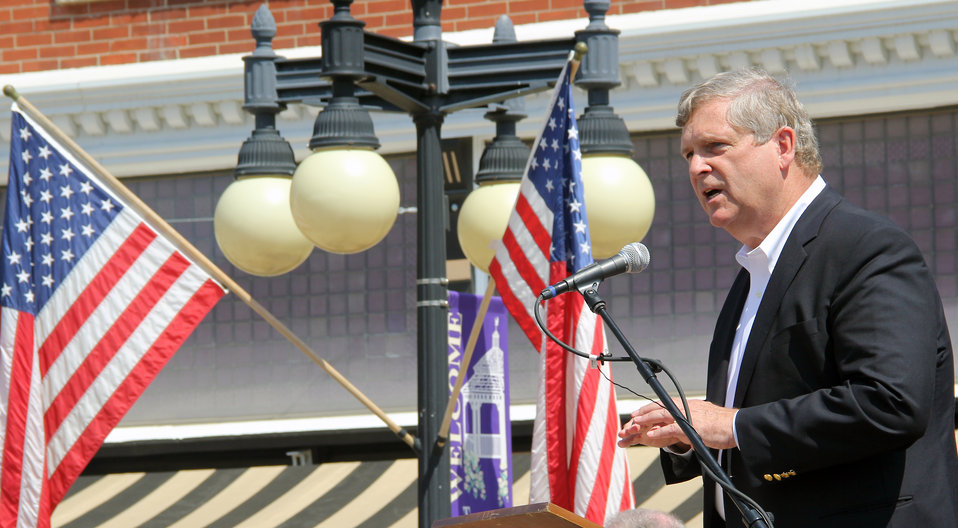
Agriculture Secretary Tom Vilsack makes remarks at the opening ceremony for the Traer Historical Museum exhibit honoring the longest serving cabinet member, former U.S. Agriculture Secretary James 'Tama Jim' Wilson. Wilson was Agriculture Secretary from 1897-1913 under Presidents McKinley, Roosevelt and Taft, at Traer Historical Museum, Traer, Iowa Traer, IA, on Saturday, Jul. 20, 2013.